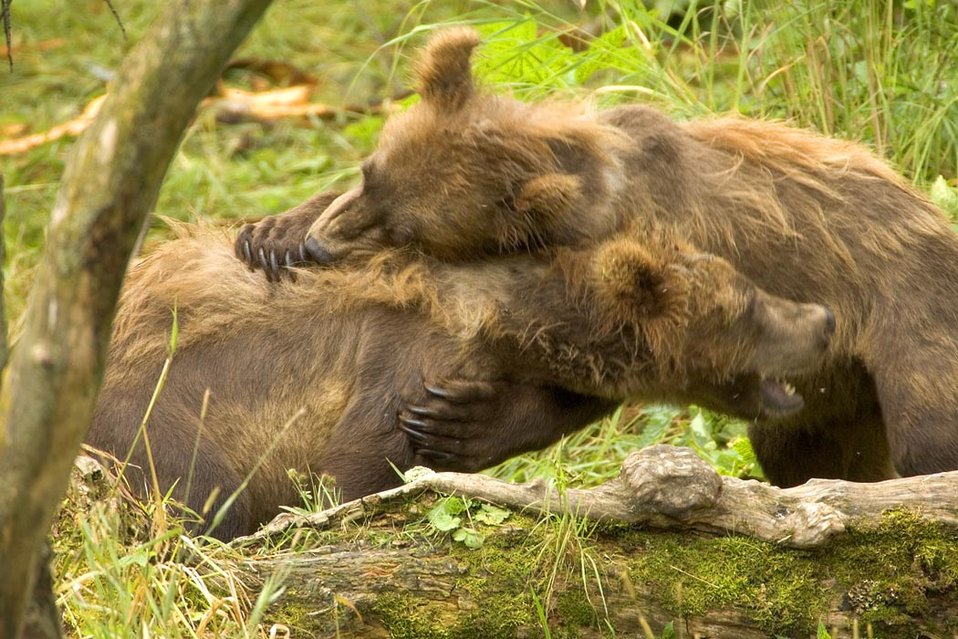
Brown bear cubs playing

Two grizzly bear cubs playing in the Kodiak National Wildlife Refuge.